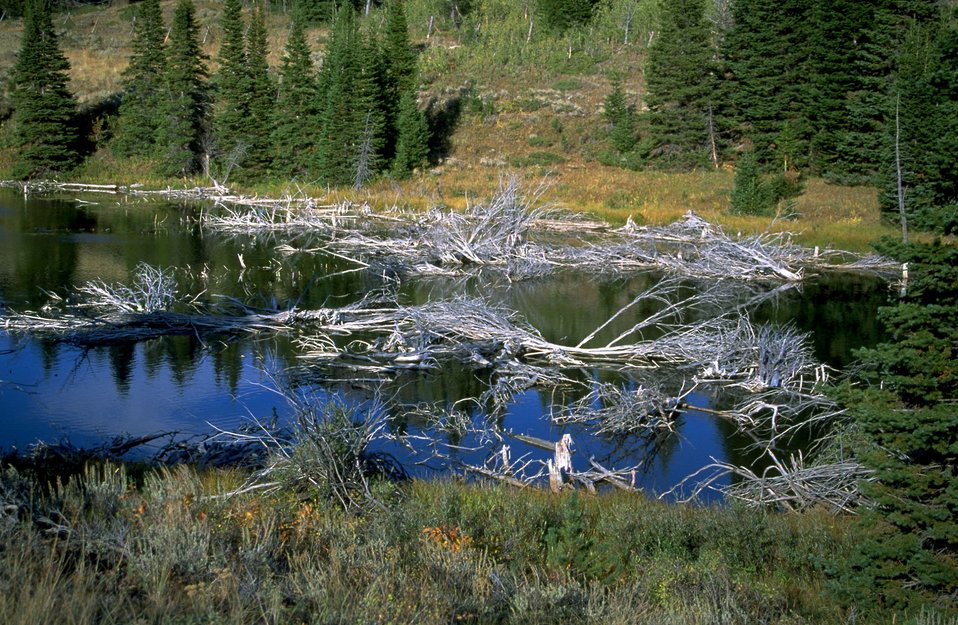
Brush in a Pond in the Axolotl Lakes Wilderness Study Area